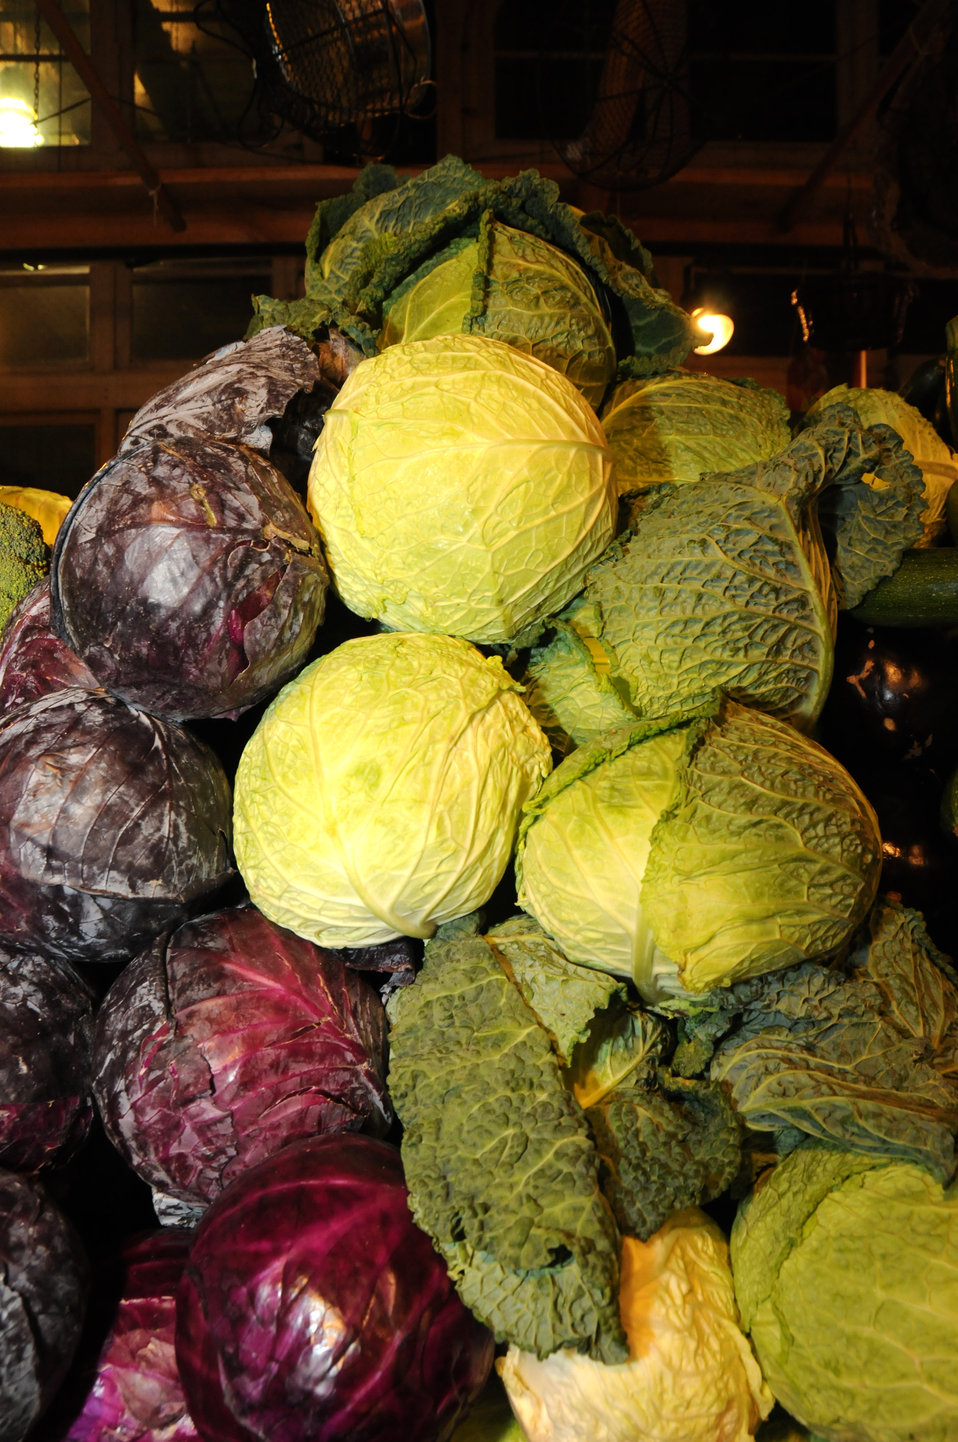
The Reading Terminal Market offers produce fresh from the field to the people of Philadelphia, PA on April 3, 2009. There are Amish specialties, fruits, vegetables, meats, seafood, and poultry. Reading Terminal Market opened for business in 1892 with approximately 78,000 square feet and almost 800 spaces for vendors. The Market was revitalized in the 1990’s and today is still the gastronomic bazaar that its original planners had envisioned. Many of the historic Market stands survived the reconstruction and are once again filled with local produce, fresh eggs, milk, meats, poultry, seafood, handmade crafts, jewelry, and clothing. The Market is home to more than 80 merchants, two of whom are descendants of the original stand holders from a century before.